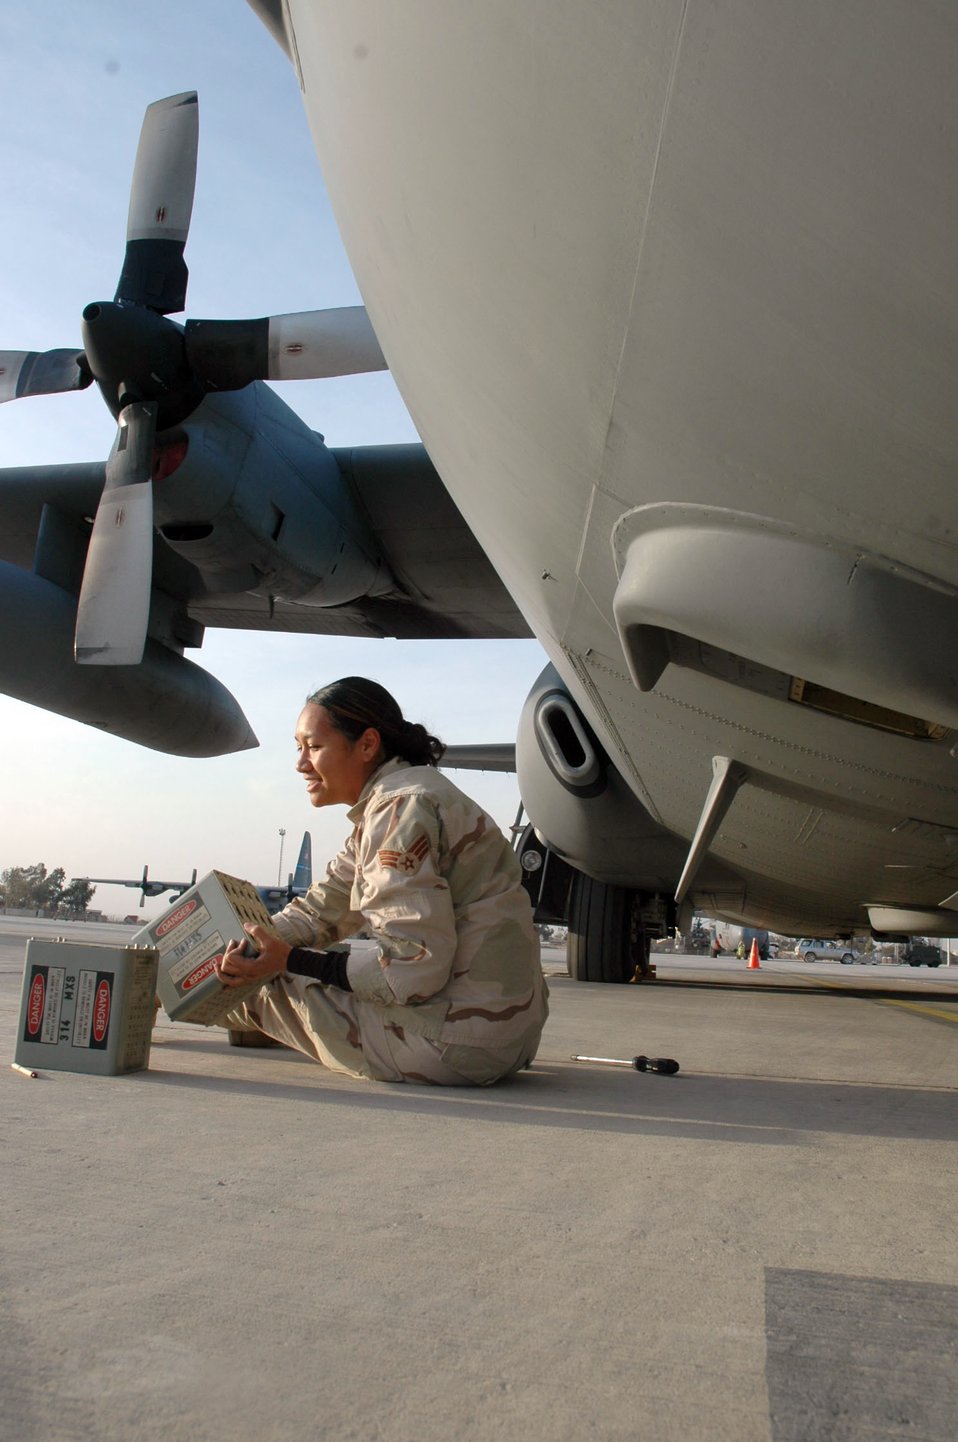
Little Rock Airlift

BALAD AIR BASE, Iraq (AFPN) -- Senior Airman BJ Enos replaces defensive flares for a C-130 Hercules stationed here. He is with the 777th Airlift Expeditionary Squadron deployed from Little Rock Air Force Base, Ark.